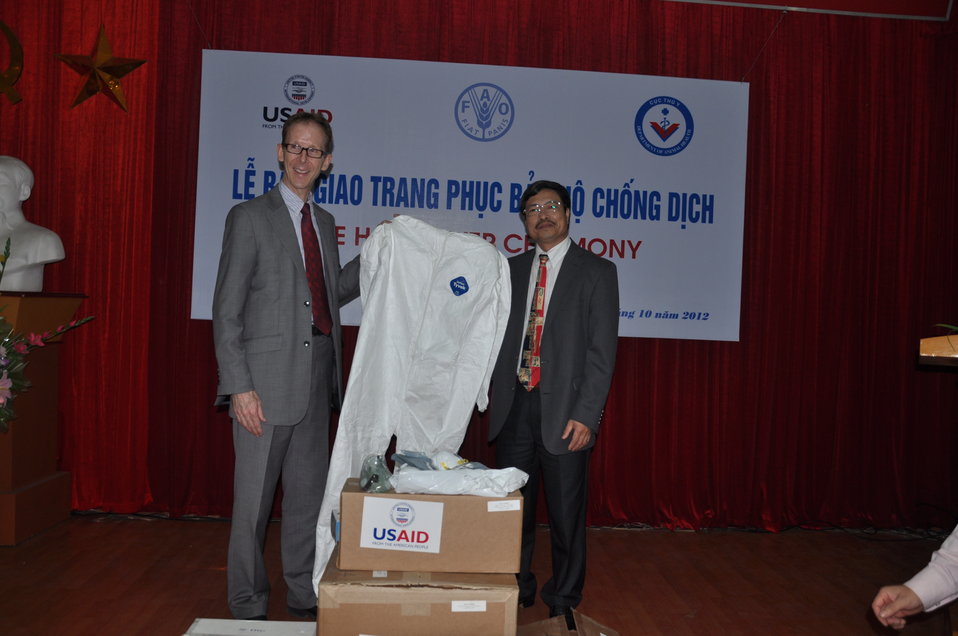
USAID Mission Director Joakim Parker, left, and Director General of Vietnam's Department of Animal Health, Dr. Pham Van Dong at the Protective Gear Handover Ceremony

Handover of personal protective equipment event in Hanoi.